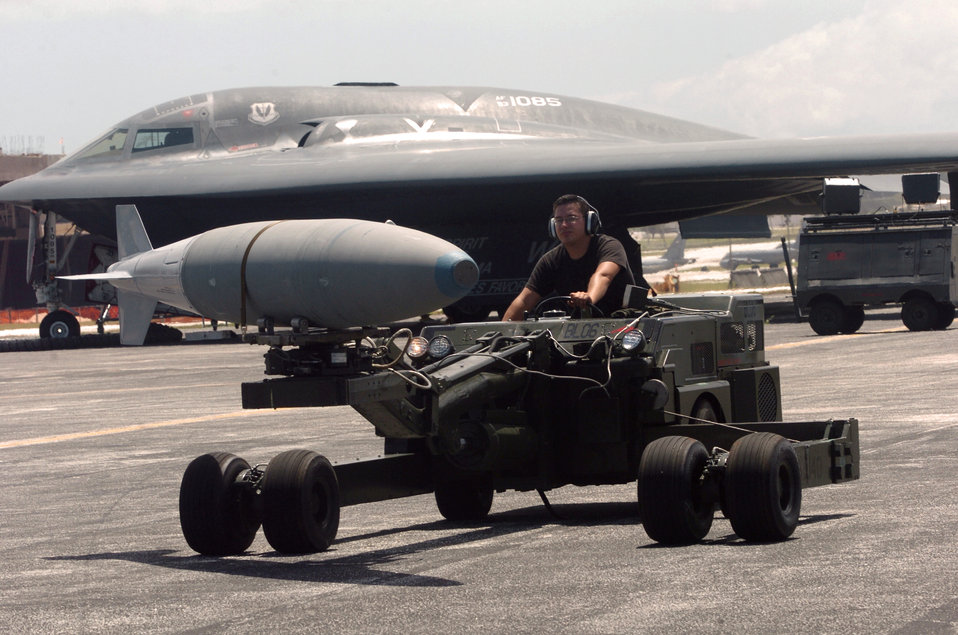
Putting the 'bomb' in bomber

ANDERSEN AIR FORCE BASE, Guam -- Senior Airman Phillip Ruiz moves a bomb to be loaded onto a B-2 Spirit bomber here. He is a weapons specialist deployed from the 509th Aircraft Maintenance Squadron at Whiteman Air Force Base, Mo.